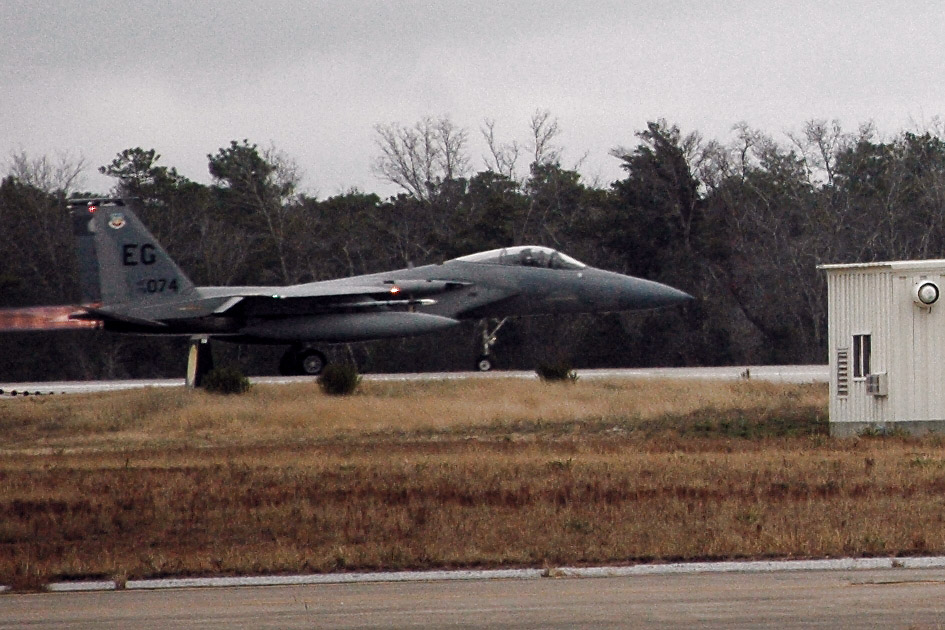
Eglin Airmen test readiness during weeklong exercise

An F-15 Eagle races into the sky as air support for a simulated Operation Noble Eagle tasking during a 33rd Fighter Wing exercise Dec. 17 at Eglin Air Force Base, Fla.